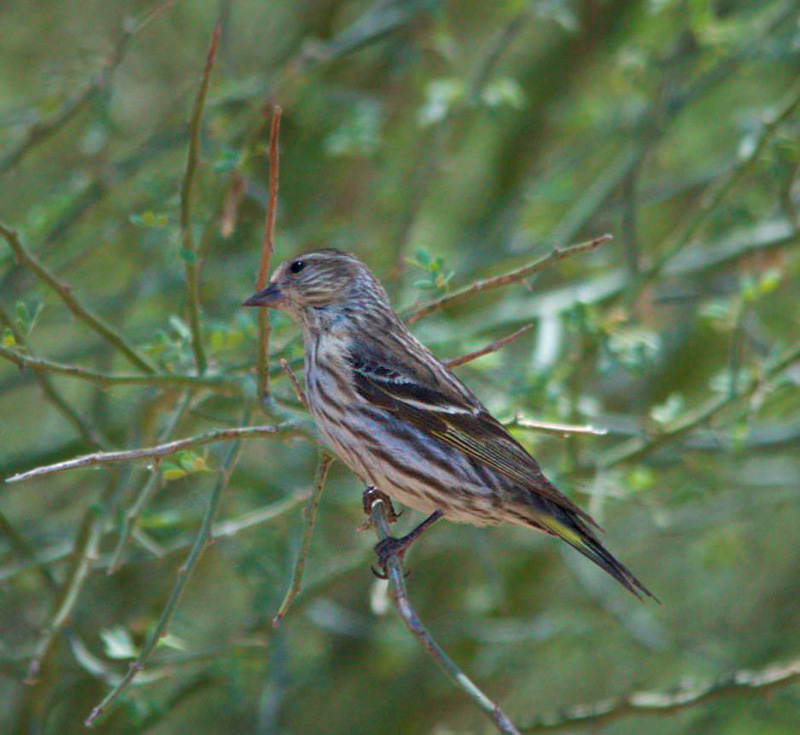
Pine Siskin-2

A pine siskin on a branch at Sonny Bono National Wildlife Refuge in May 2013. This nomadic finch ranges widely and erratically across the continent each winter in response to seed crops. Better suited to clinging to branch tips than to hopping along the ground, these brown-streaked acrobats flash yellow wing markings as they flutter while feeding or as they explode into flight. Flocks are gregarious, and you may hear their insistent wheezy twitters before you see them.